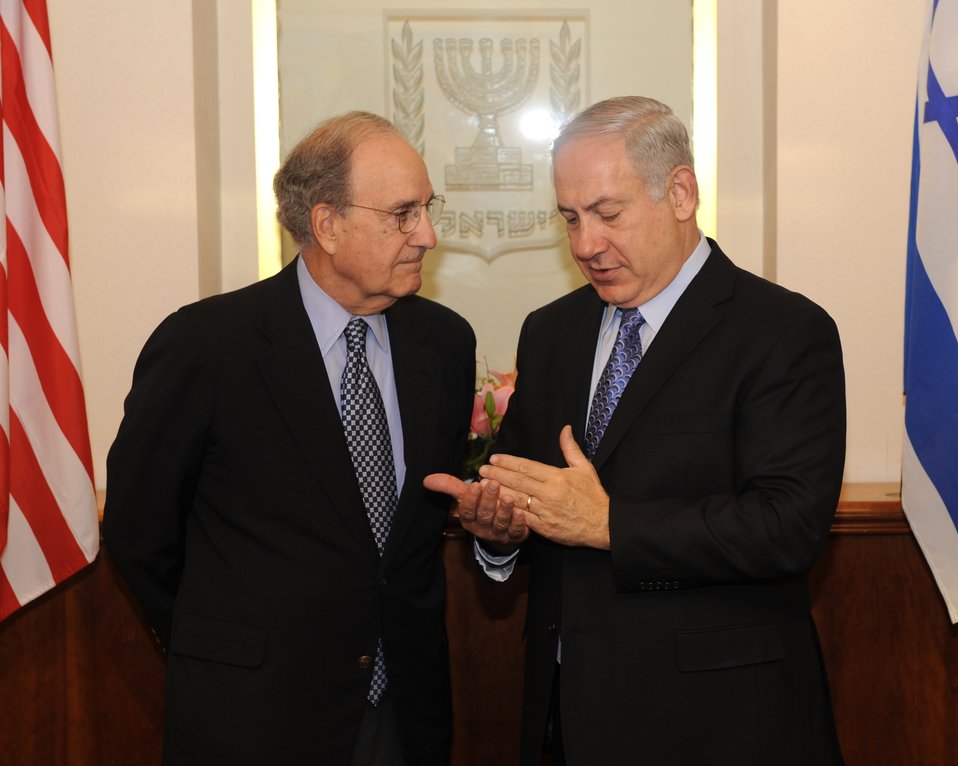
Special Envoy Mitchell Meets With Israeli Prime Minister Netanyahu

Special Envoy for Middle East Peace George Mitchell meets with Israeli Prime Minister Binyamin Netanyahu at the Prime Minister’s office, Jerusalem May 20, 2010.